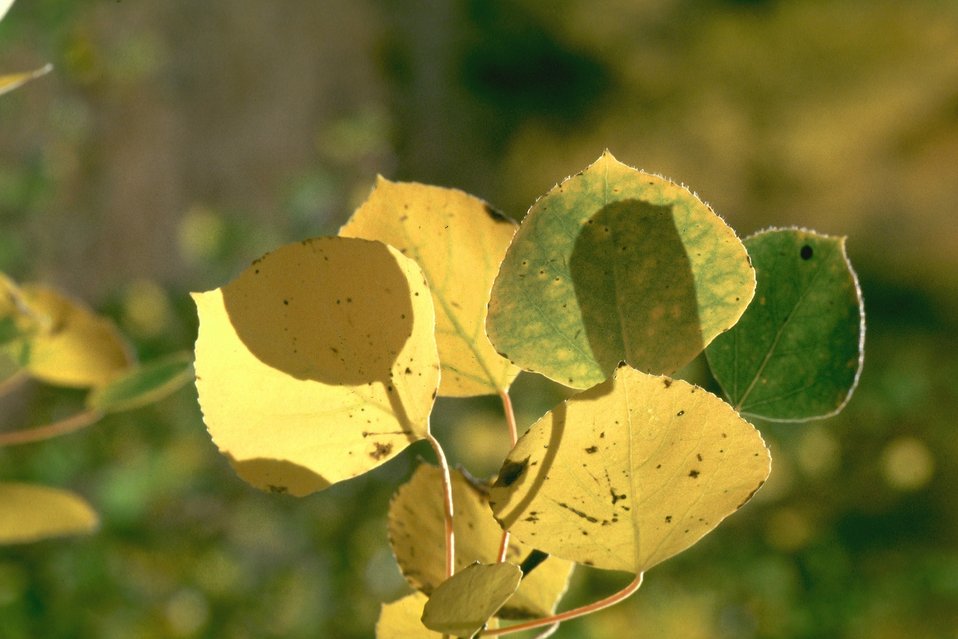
Aspen leaves. Fish Creek, Steen's Mountain.